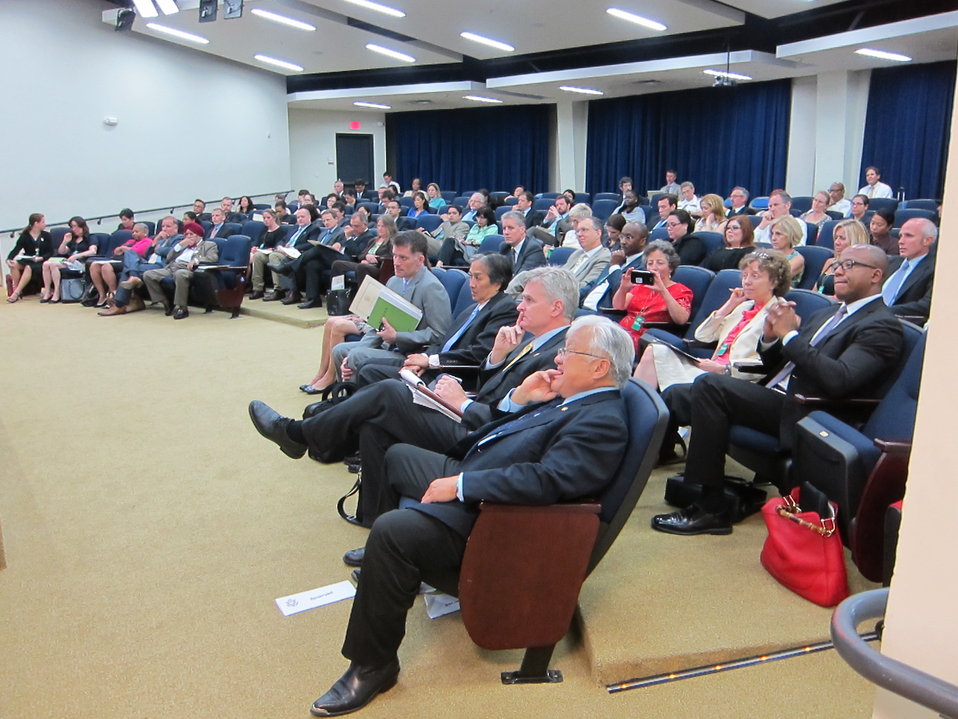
WH 2012 World Hepatitis Day Event